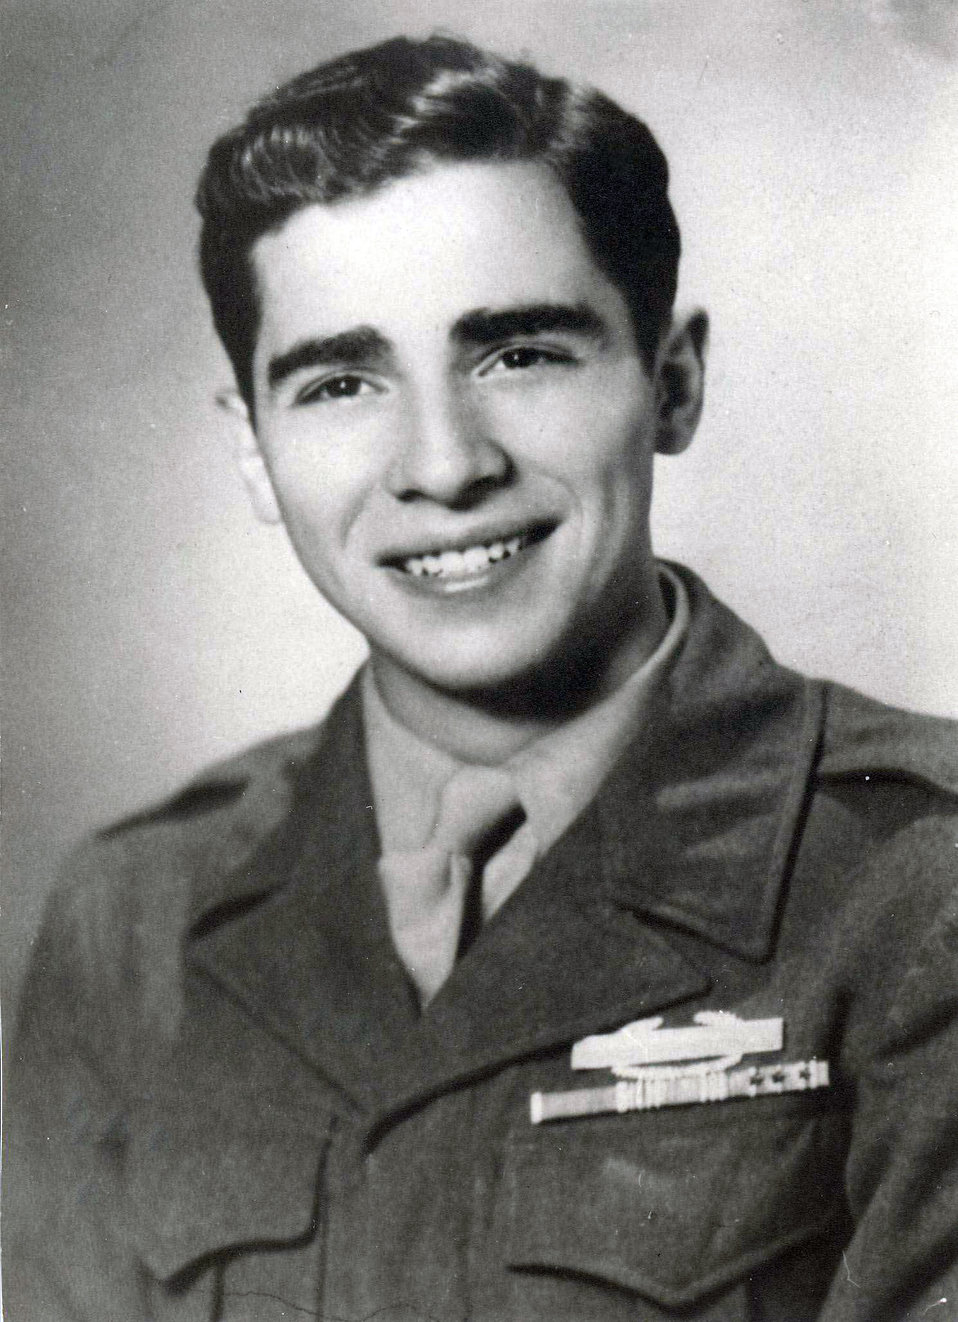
Air Force employee serves more than half a century

Army Sgt. Anthony Duno pictured in 1944 as an infantryman serving under Army Gen. George S. Patton's 3rd Army during World War II. Now as the U.S. Air Force in Europe's real estate chief with nearly 60 years of service, he is the second longest serving Air Force civilian. During a recent office call, Secretary of the Air Force Michael B. Donley commended Mr. Duno for his life of service and remarked he is a shining example of its strong calling.